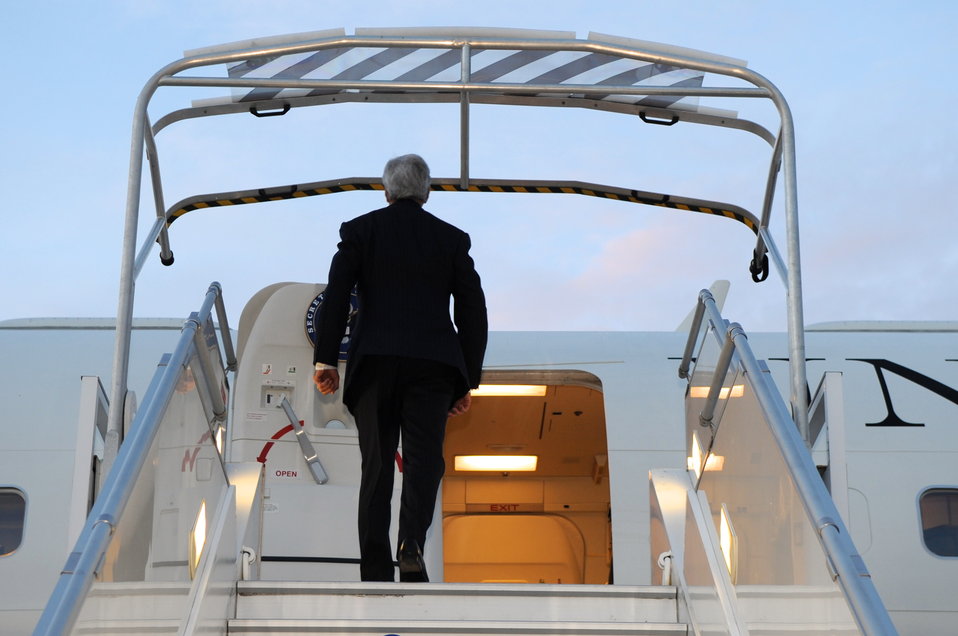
Secretary Kerry Departs Paris En Route London

U.S. Secretary of State John Kerry boards his Air Force jet before flying from Paris, France, to London, United Kingdom for meetings with the London 11 on October 22, 2013.